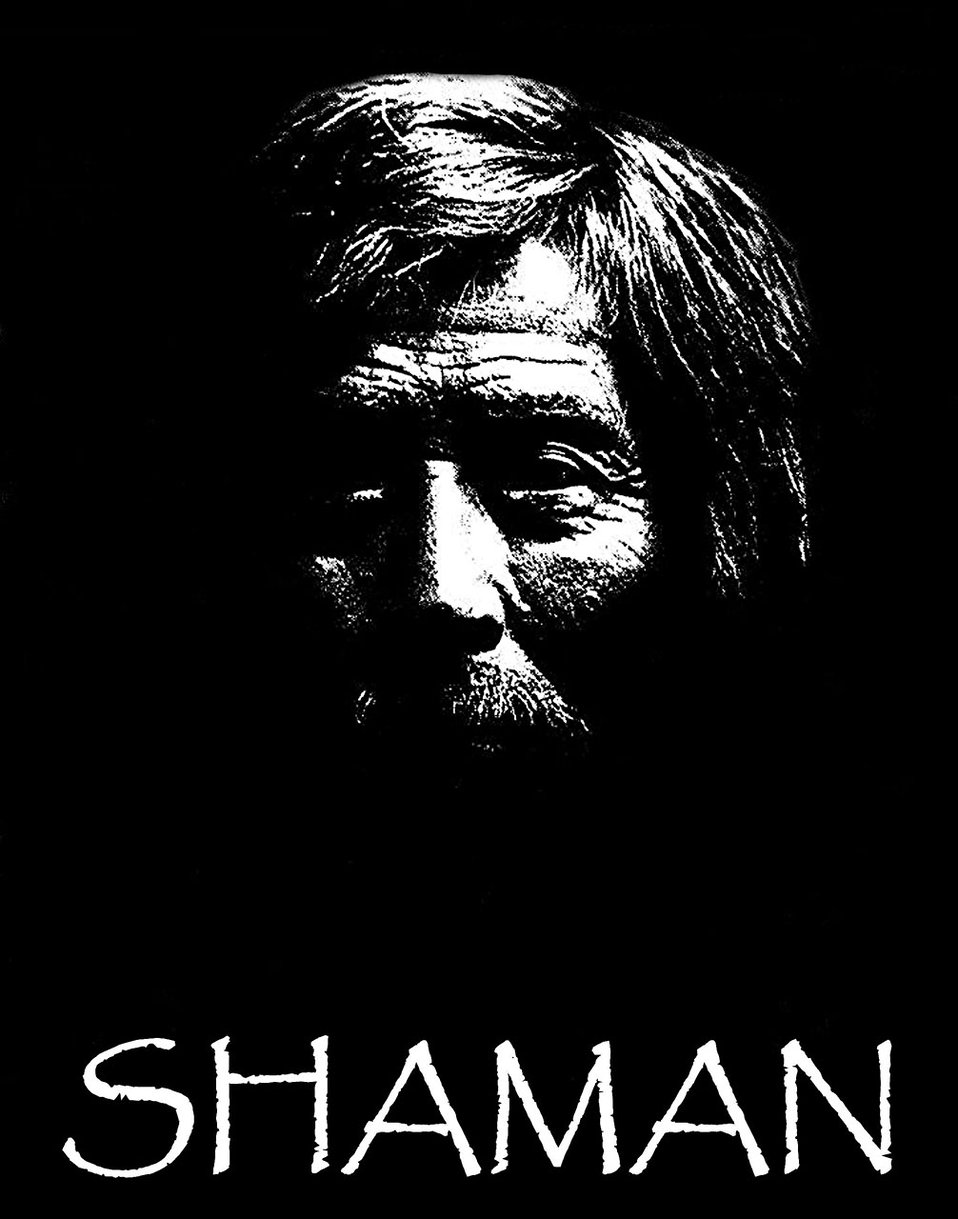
Shaman

Late 1800's pacific north west shaman.